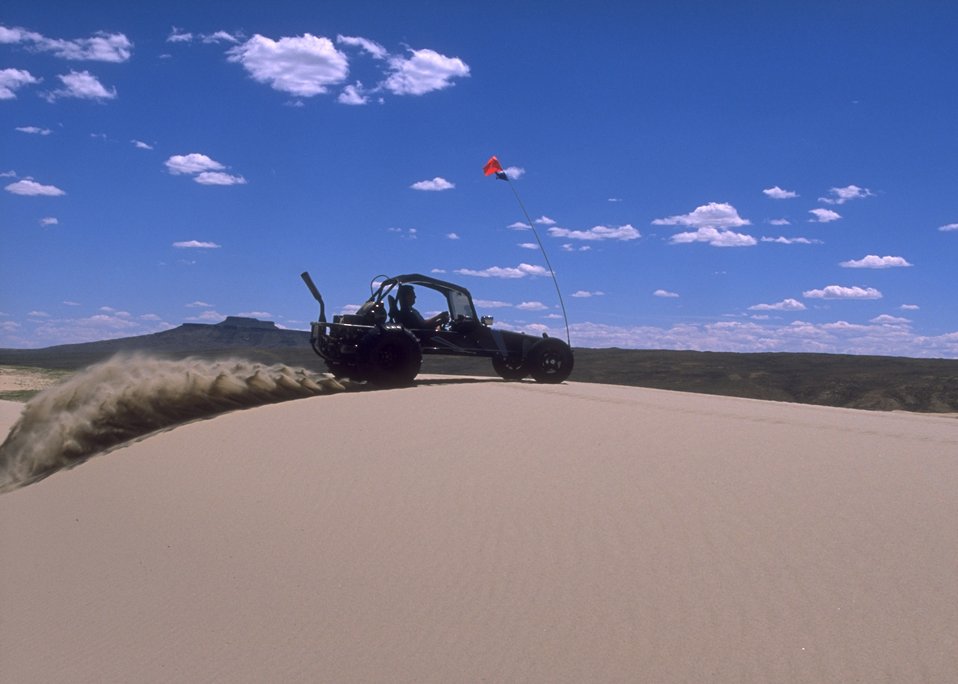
Sand Dunes OHV Area, Rock Springs Field Office.